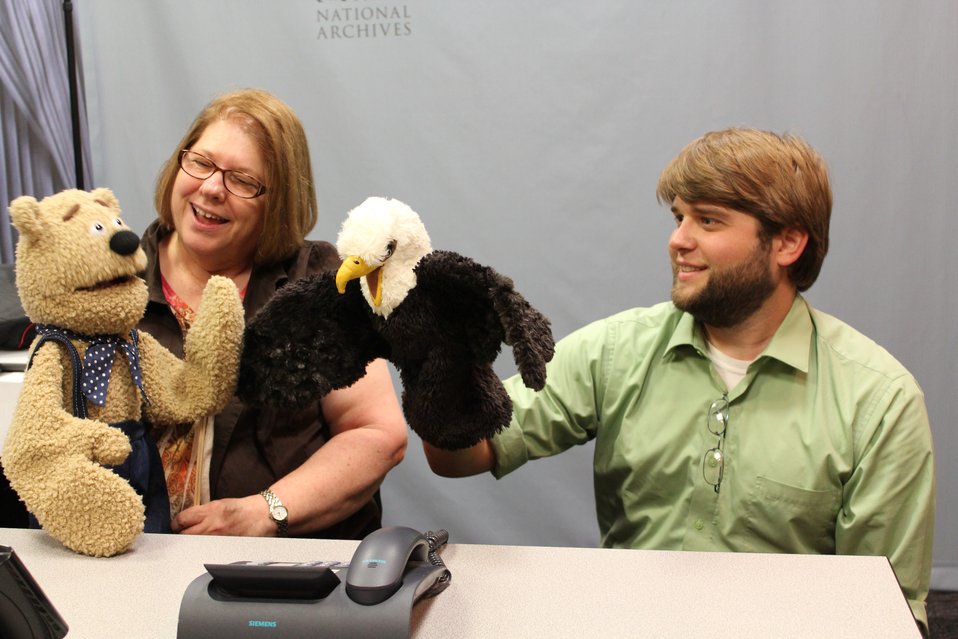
Mickey Ebert (LE) and Christopher Magee (RMKC) presenting a puppet show with Harry History and the Eagle for students via Interactive Distance Learning technology.; Location: National Archives at Kansas City - Interactive Distance Learning Lab, Kansas City, MO